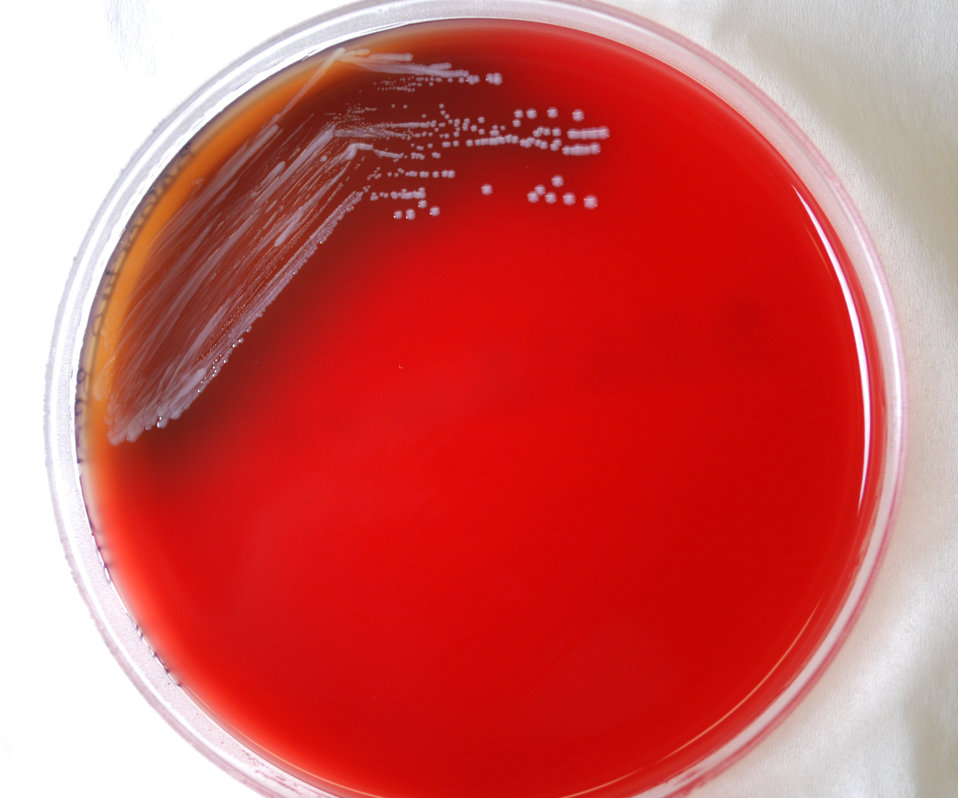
This photograph depicts the colonial morphology displayed by Gram-negative Brucella abortus bacteria, which was grown on a medium of sheep's blood agar (SBA), for a 72 hour time period, at a temperature of 37�C. For a closer view of these bacterial colonies, see PHIL 12285. B. abortus bacteria are known to cause the disease brucellosis.